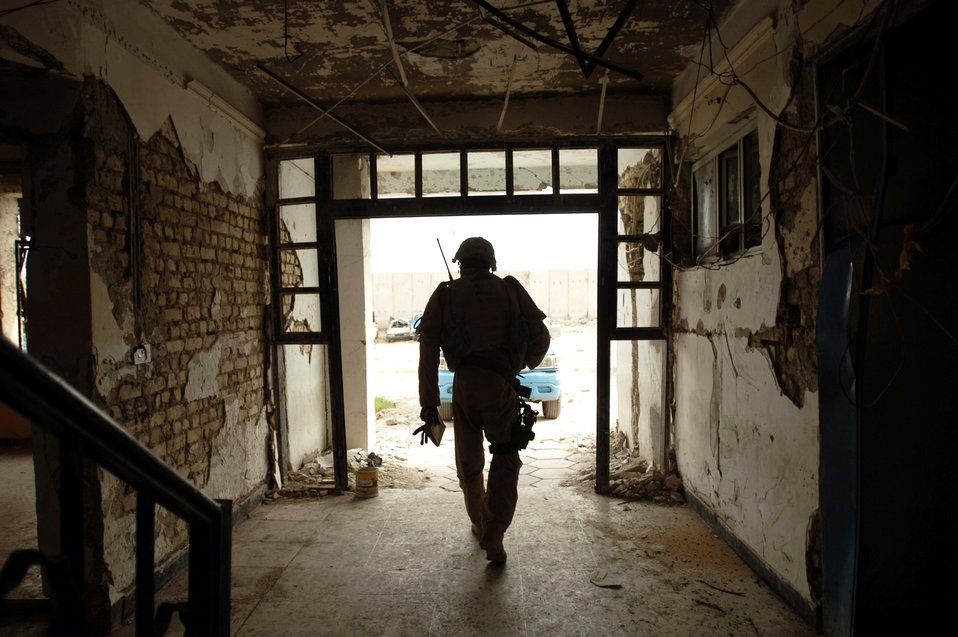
Dangerous road to progress

Staff Sgt. Michael Ellis and his convoy leave the recently bombed Baghdad police station after providing training to Iraqi police May 9 in Baghdad. Members of Det. 3, 732nd Expeditionary Security Forces Squadron, perform police transition team duties of mentoring, coaching and teaching.